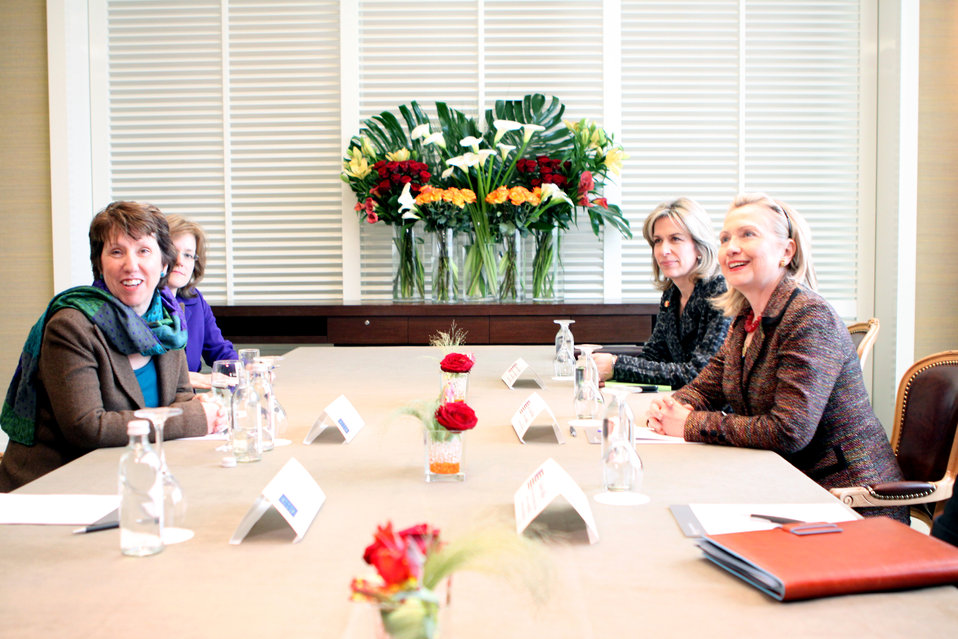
Secretary Clinton Meets With EU High Representative Ashton

U.S. Secretary of State Hillary Rodham Clinton meets with Catherine Ashton, High Representative of the European Union for Foreign Affairs and Security Policy, at the Hotel Intercontinental in Geneva, Switzerland, on February 28, 2011. The meeting took place on the side of the February 28 High Level Segment of the Human Rights Council.